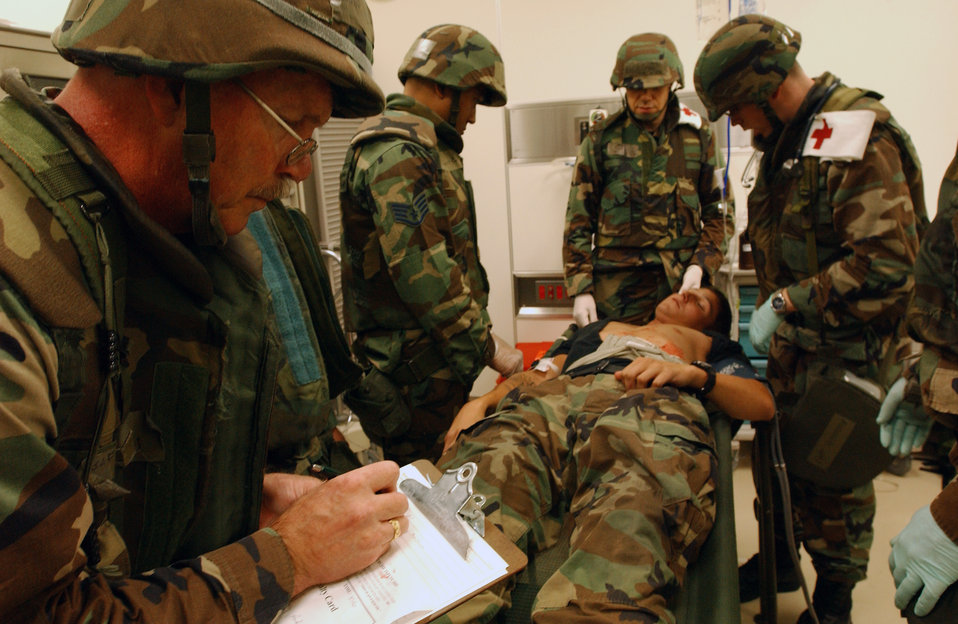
Lifesaving training

Lt. Col. Pete Sorenson writes down the conditions of a patient before transporting him to the hospital at Kadena Air Base, Japan, Oct. 24. The mass casualty scenario helped Airmen train on treating wounds and applying basic life-saving steps during the Local Operational Readiness Exercise Beverly High 08-1. Colonel Sorenson is assigned to the 18th Medical Group.